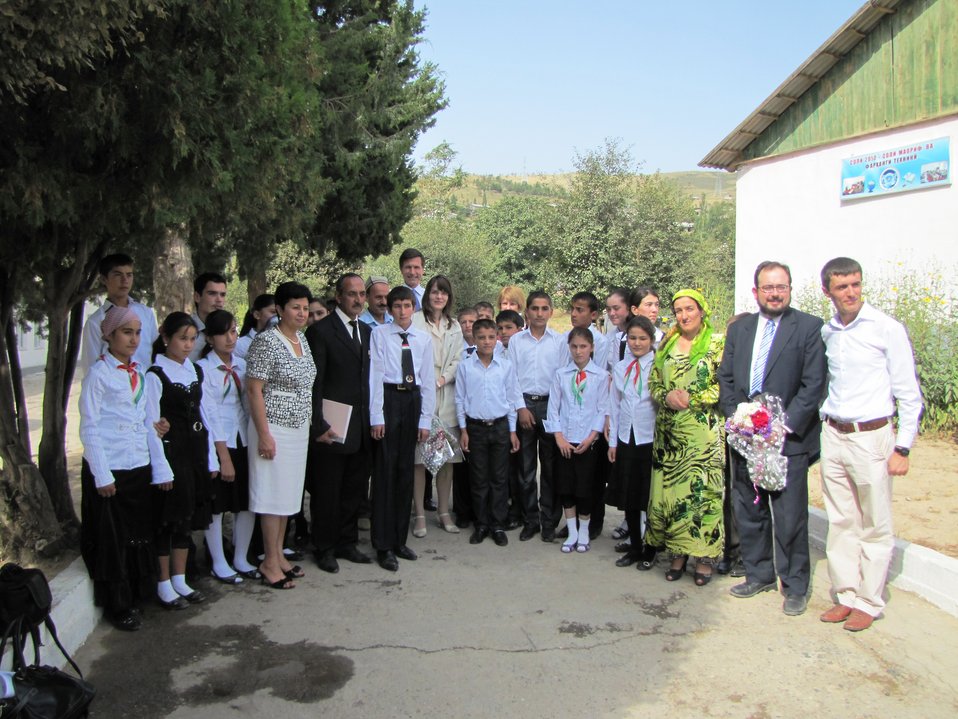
Assistant Secretary Blake Commemorates the First Day of School in Tajikistan

U.S. Assistant Secretary of State for South and Central Asian Affairs Robert O. Blake commemorates the first day of school at Varzob School No. 40 in Dushanbe, Tajikistan, on September 1, 2010.